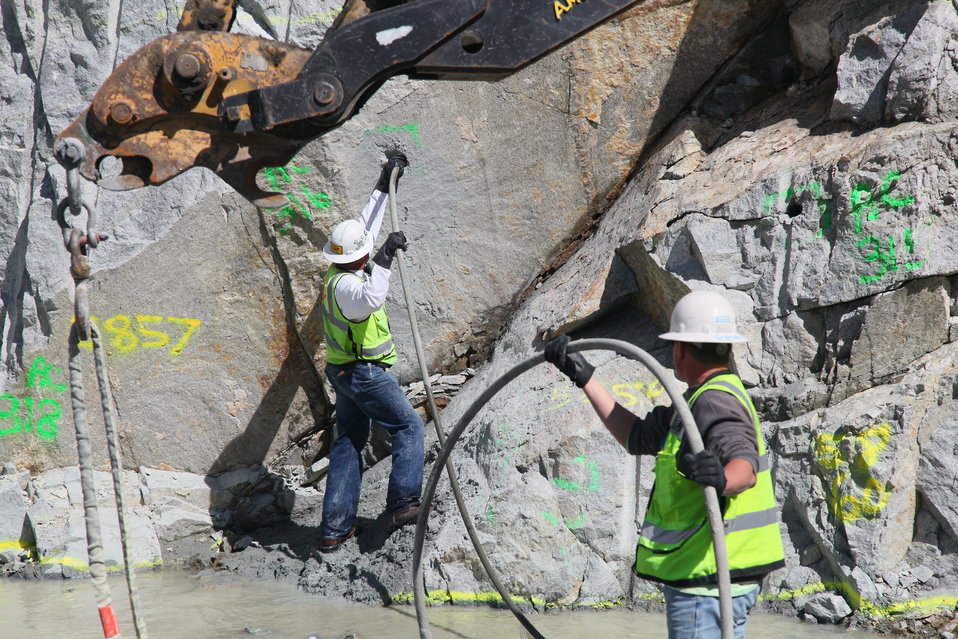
Installing rock securing bolts at the Folsom Dam auxiliary spillway

Contractors for the U.S. Army Corps of Engineers Sacramento District install a slurry mix and bolts to secure rock walls at the excavation site for the Folsom Dam auxiliary spillway in Folsom, Calif., April 5, 2012. Geologists determine placement of drilled holes to secure the upstream rock wall of the spillway. The spillway, scheduled to be ready for use in 2017, will allow Folsom Dam to release water sooner and more safely. The project is part of the Folsom Dam Joint Federal Project, a joint effort of the Sacramento District, the U.S. Bureau of Reclamation, the Central Valley Flood Protection Board and the Sacramento Area Flood Control Agency to improve the safety of the dam and reduce flood risk for the greater Sacramento area.